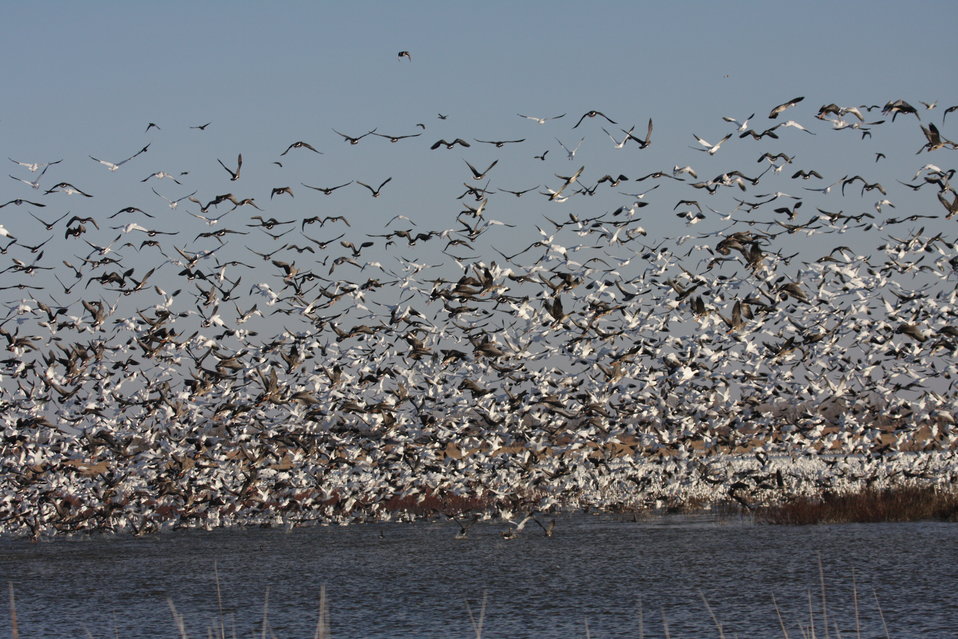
Geese Flock

Flocks like this will often occur after water units are first drawn down to allow the growth of moist-soil plants, then re-flooded.